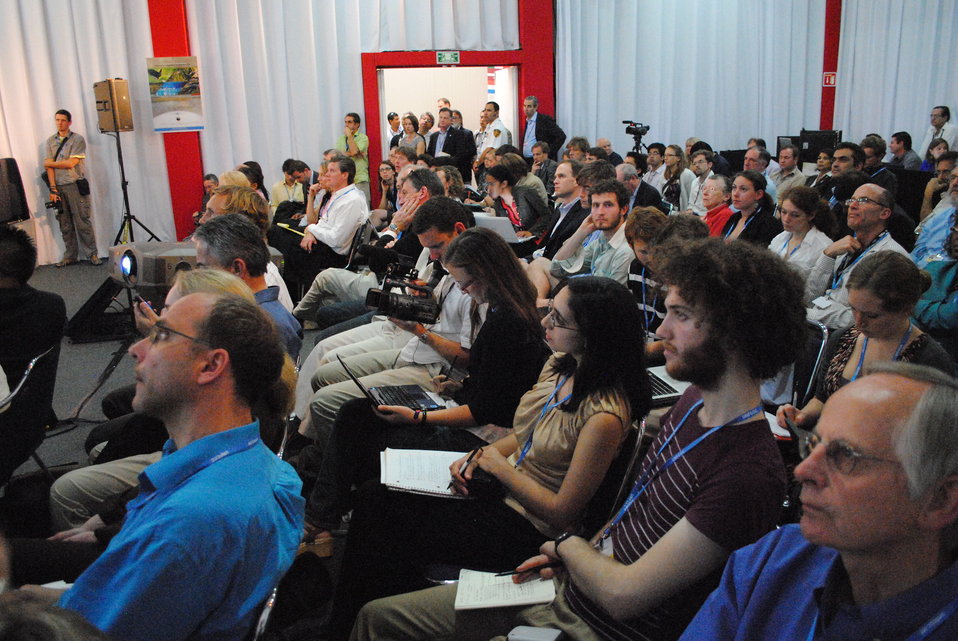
Audience Members Listen to Secretary Chu

Members of the audience listen to U.S. Secretary of Energy Steven Chu at the U.S. Center at COP-16 in Cancun, Mexico, on December 6, 2010.